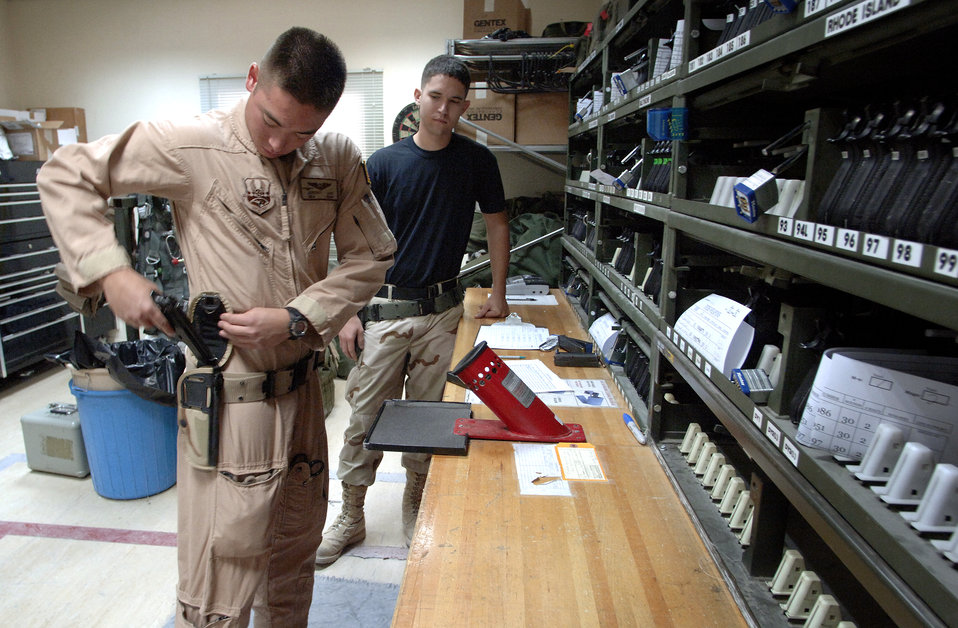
Aeromedical evacuation mission

Aircrew life support technician, Airman Andrew Blackmon, in back, issues Senior Airman Jeremy Ray a 9mm handgun, for self defense, prior to an aeromedical evacuation mission over Southwest Asia.